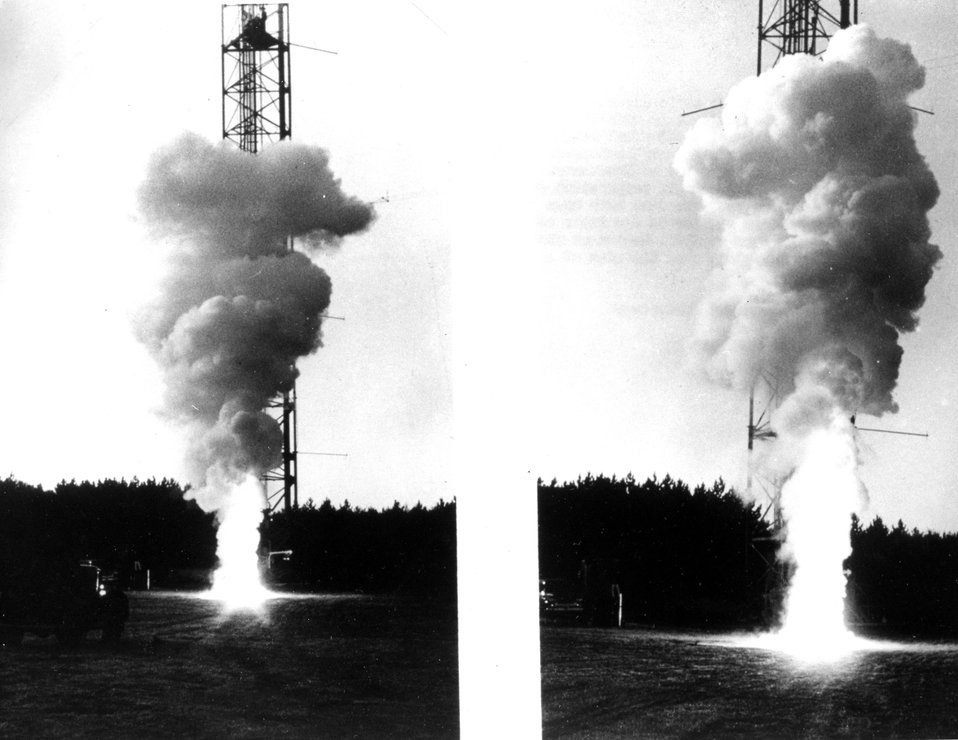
Small scale experiments conducted with burning rocket fuels provide data used in
prediction of the diffusion and final height-of-rise of clouds from larger accidental releases. Wind and air temperature data are taken on nearby towers.